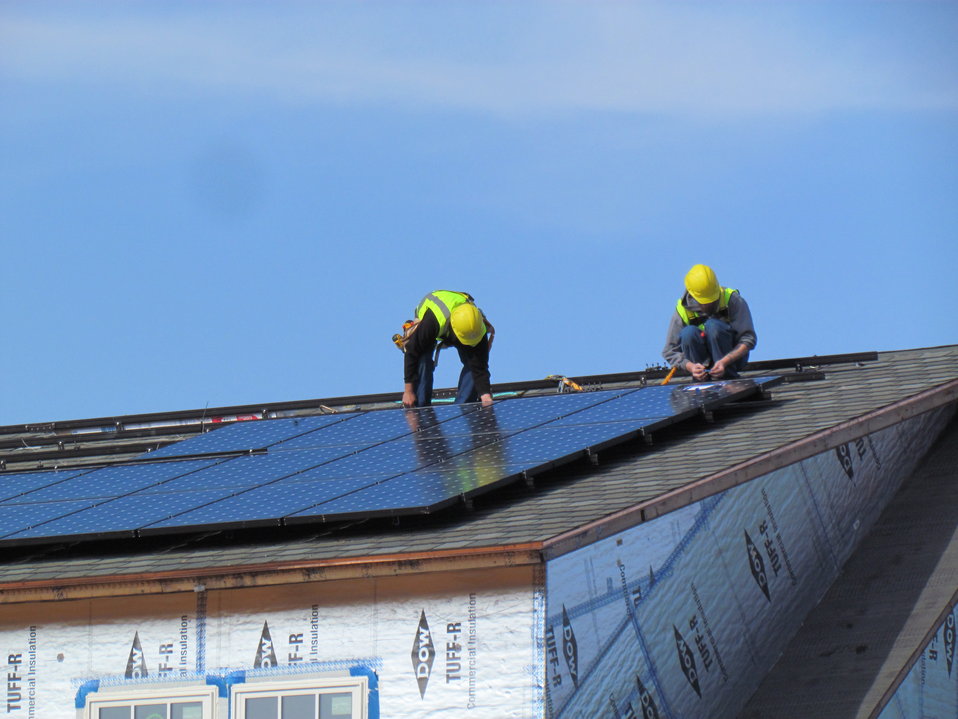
Net-Zero Energy Residential Test Facility - Workmen installing photovoltaic panels on roof of facility.